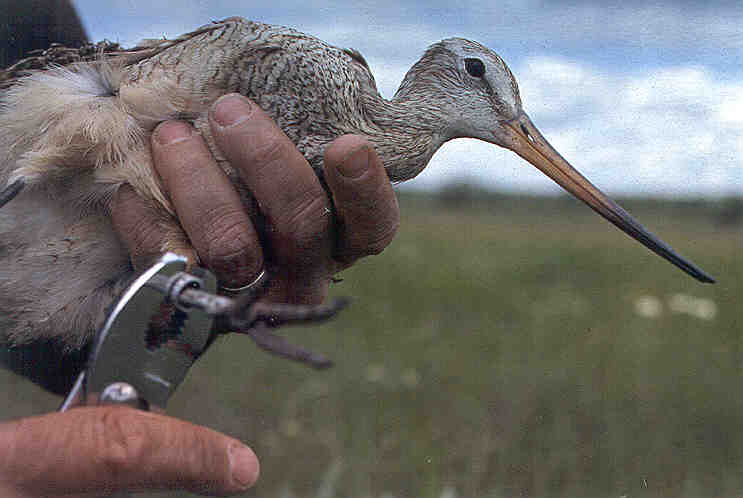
Banding Marbled Godwit on Bowdoin NWR

Banding of a marbled godwit on Bowdoin NWR.